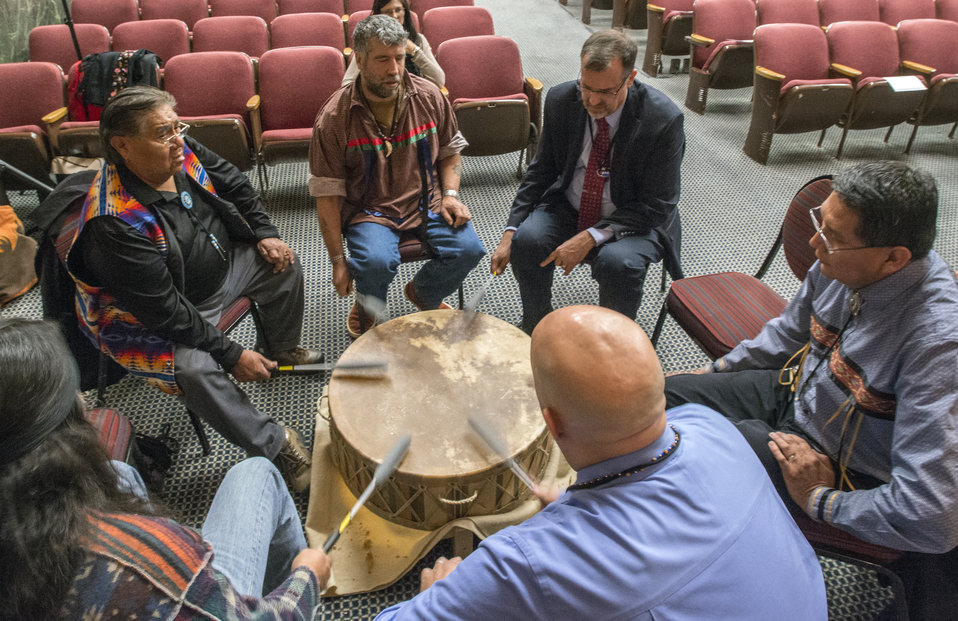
The U.S. Department of Agriculture (USDA) Natural Resources Conservation Service (NRCS) American Indian/Alaska Native Employee Association (AIANEA) American Indian Drum Group singer/drummers (clockwise from upper left) Tribal Elder Norman Lopez (Ute Mountain Ute Tribe); Wellsboro, Colorado District Conservationist, AIANEA member Ciro Lopinto (Hopi); National Design Engineer and AIANEA 1st Vice President Steve Durgin ; Conservation Engineering Director Noller Herbert (Navajo), Office of Tribal Relations (OTR) Tribal Relations Manager John Lowery (Lummi); and Trinidad, Colorado District Conservationist and AIANEA Drum Keeper Levi Montoya practice before the 2013 American Indian and Alaska Native Heritage Observance at the U.S. Department of Agriculture (USDA) on Thursday, Nov. 14, 2013 in Washington, D.C. The purpose of the American Indian/Alaska Native Program is to provide focus on issues such as employment, promotion, training, and career enhancement affecting American Indian/Alaska Native Employees and applicants in NRCS. AIANEA’s American Indian Drum Group promotes traditional ways of teaching through songs, stories, and community. The American Indian/Alaska Native Employee Association for Natural Resources Conservation Service was formed in 1997. To find out more, go to www.wv.nrcs.usda.gov/about/civilRights/ai/aianpm.html. The theme of this year’s event was “Guiding Our Destiny with Heritage and Traditions.”